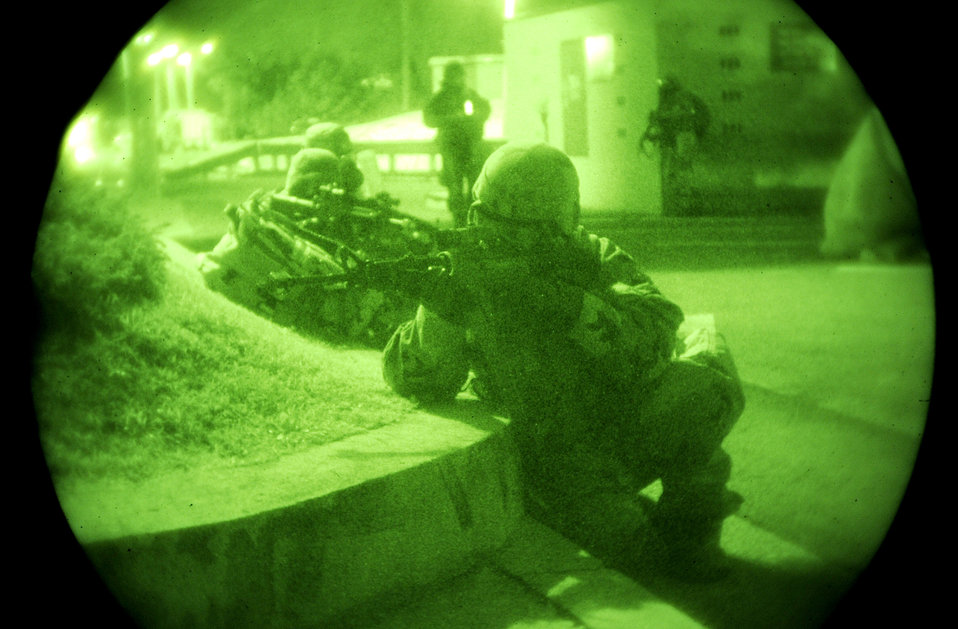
You're in my sight...

Airmen from the 51st Security Forces Squadron fight off